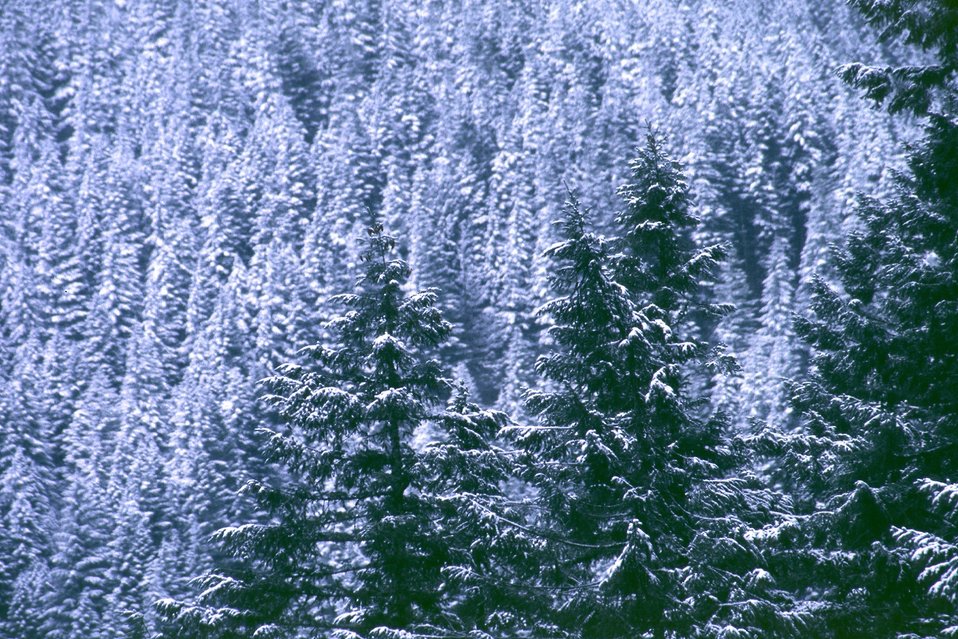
Mid Winter forest scene in the Mollala Corridor.